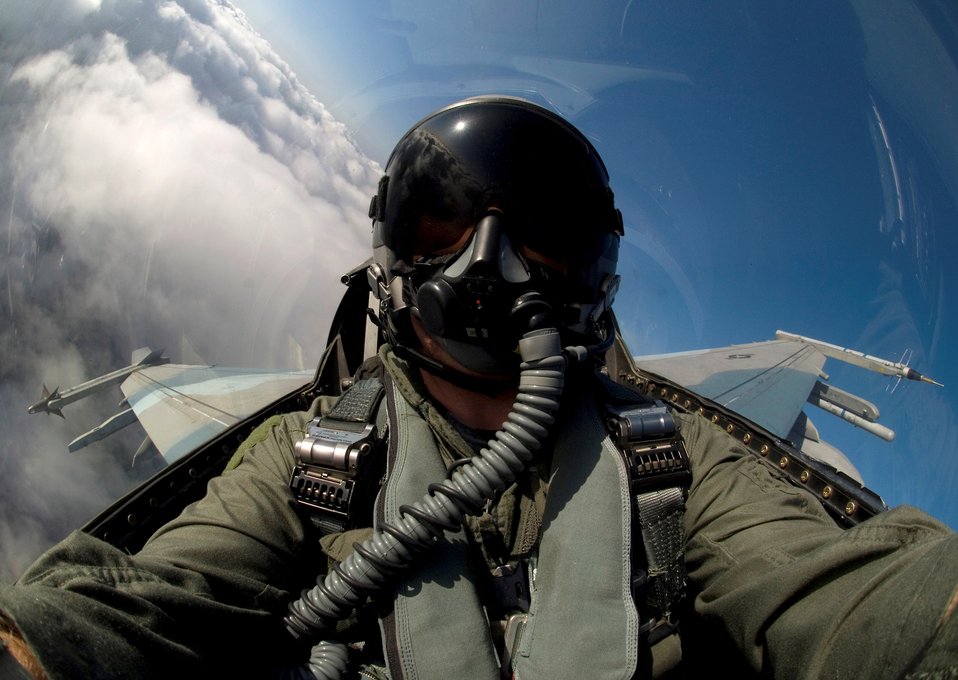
Rolling in for a shot

An F-16 Fighting Falcon assigned to the 80th Fighter Squadron at Kunsan Air Base, South Korea, banks over a training range Nov. 29 during a close-air-support training mission. Pilots utilize simulated training missions to keep their war-fighting skills honed.